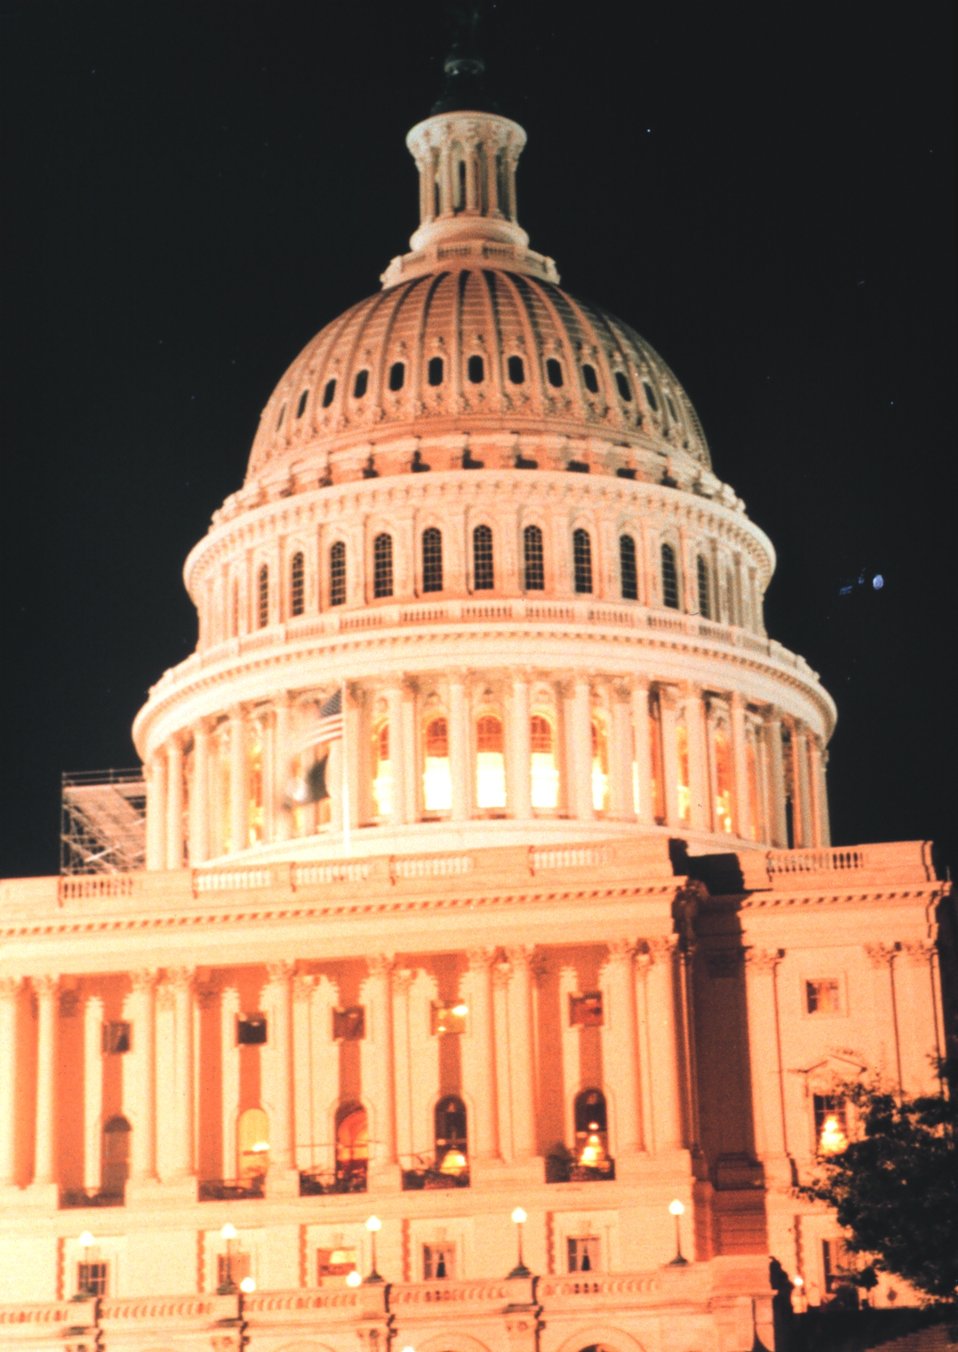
Dome of the U. S. Capitol Building.